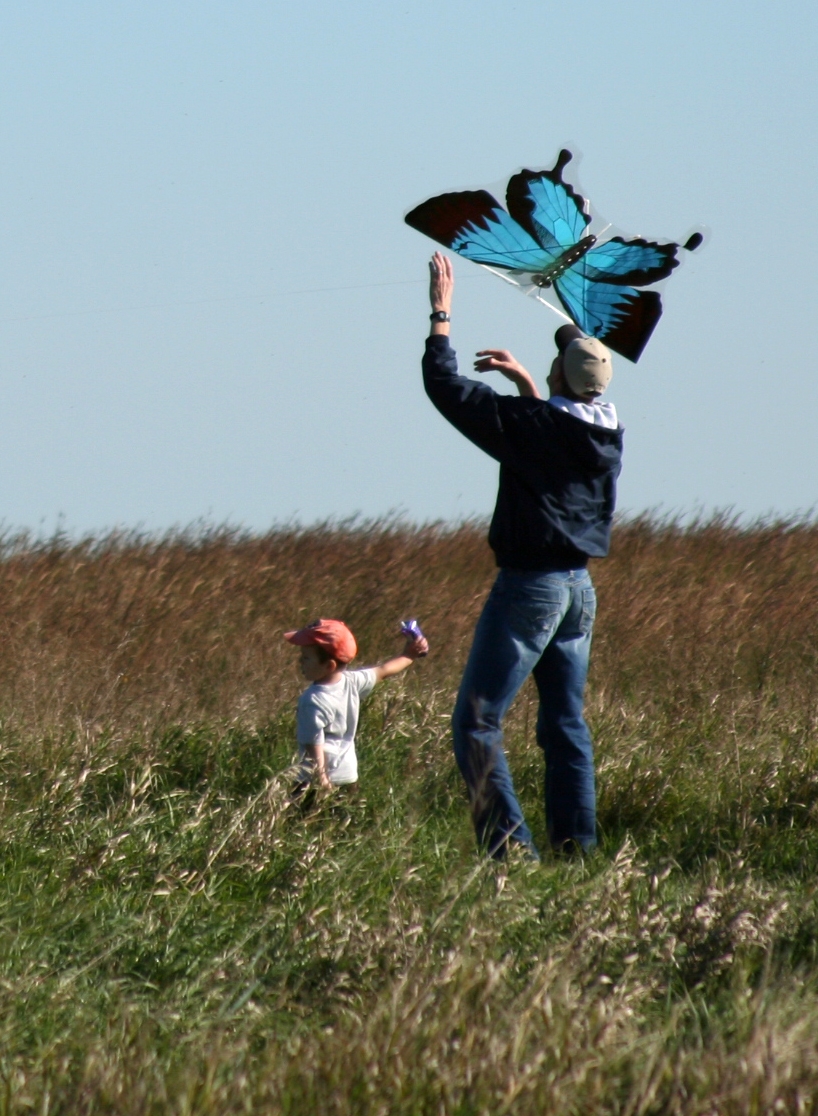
Man and Boy Fly a Kite

A man and a young boy attempt to launch their kite on a beautiful September afternoon in 2010 at the Huron WMD. The 'Kites N Flight' event focused on getting kids outdoors, and featured an educational piece on bird flight and migration.